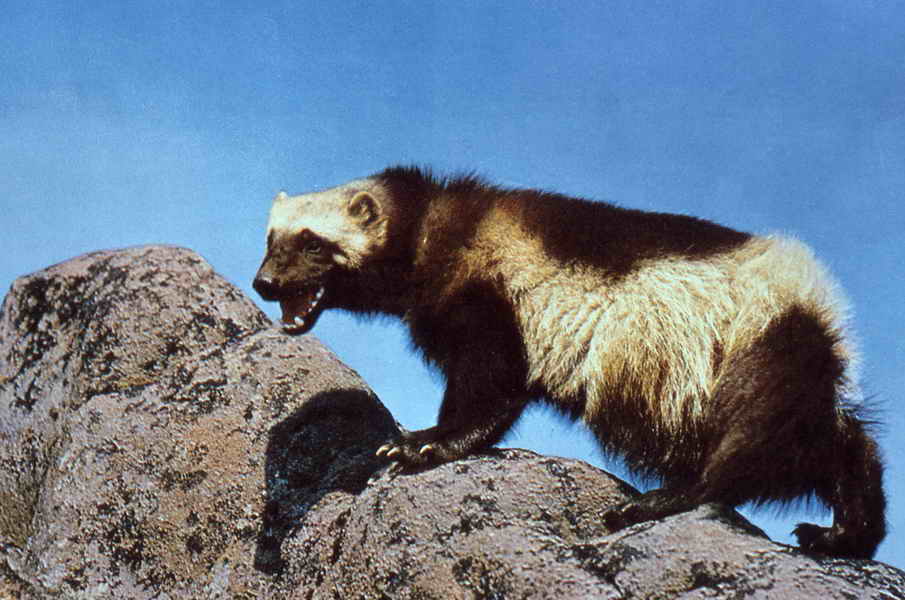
wolverine in the wild